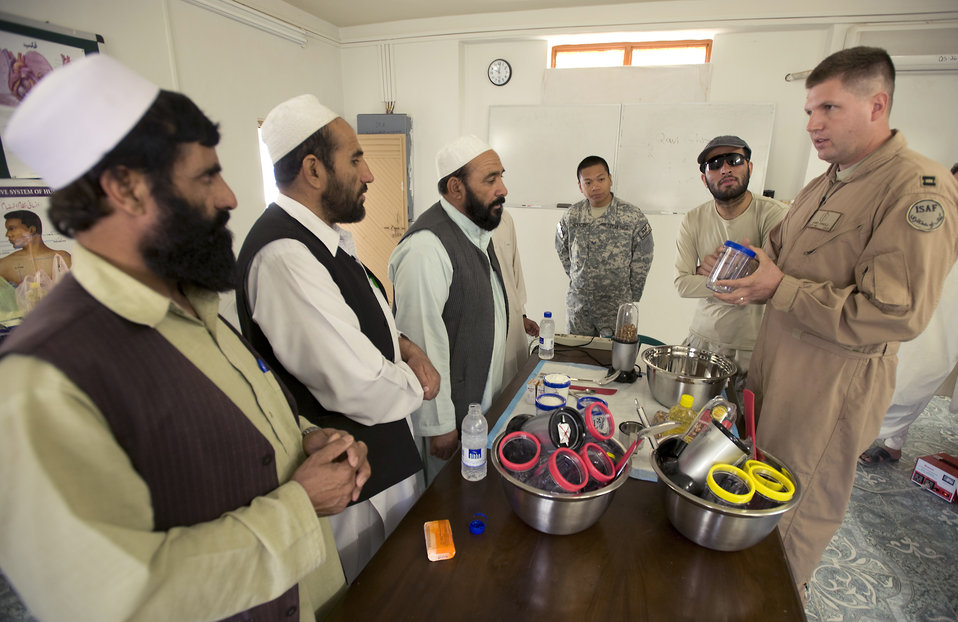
Servicemembers help malnourished Afghan children

Capt. (Dr.) James Arnold shows medical professionals from the Zaubl province how to make